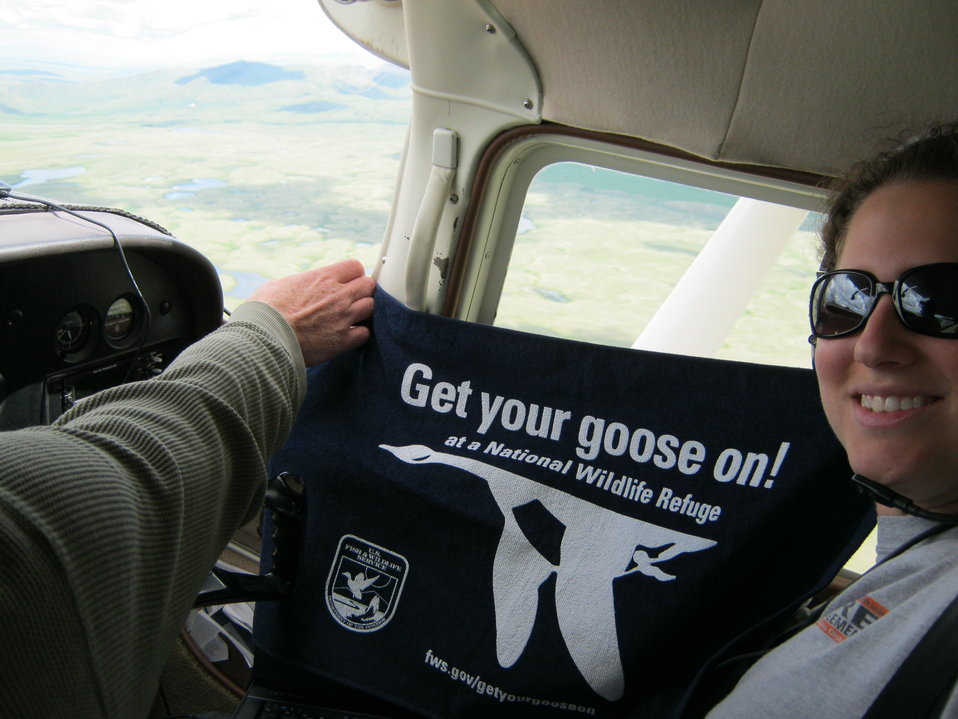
Get Your Goose On!

The goose takes flight at Benton Lake National Wildlife Refuge